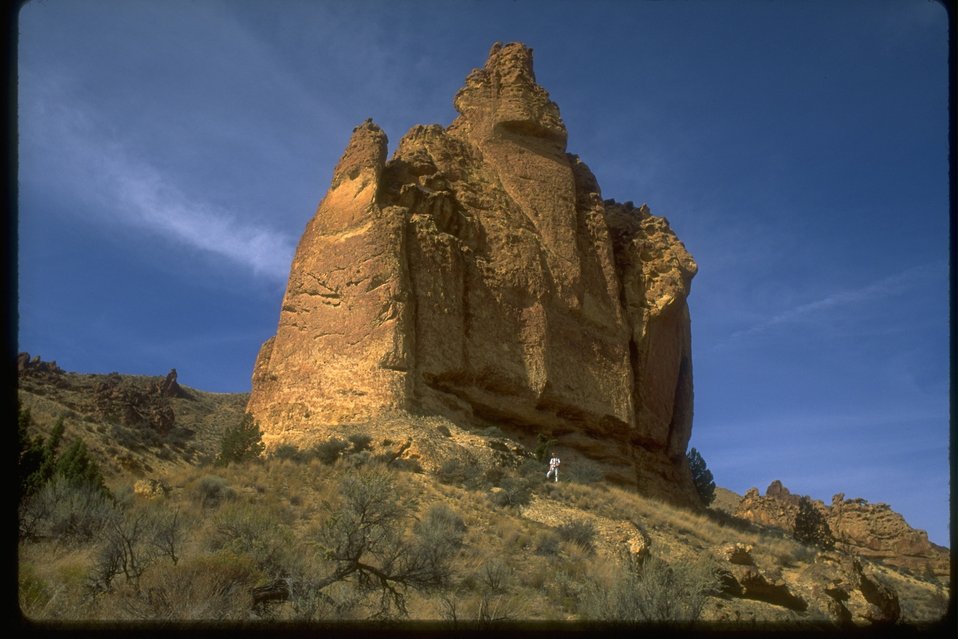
Leslie Gulch Series.